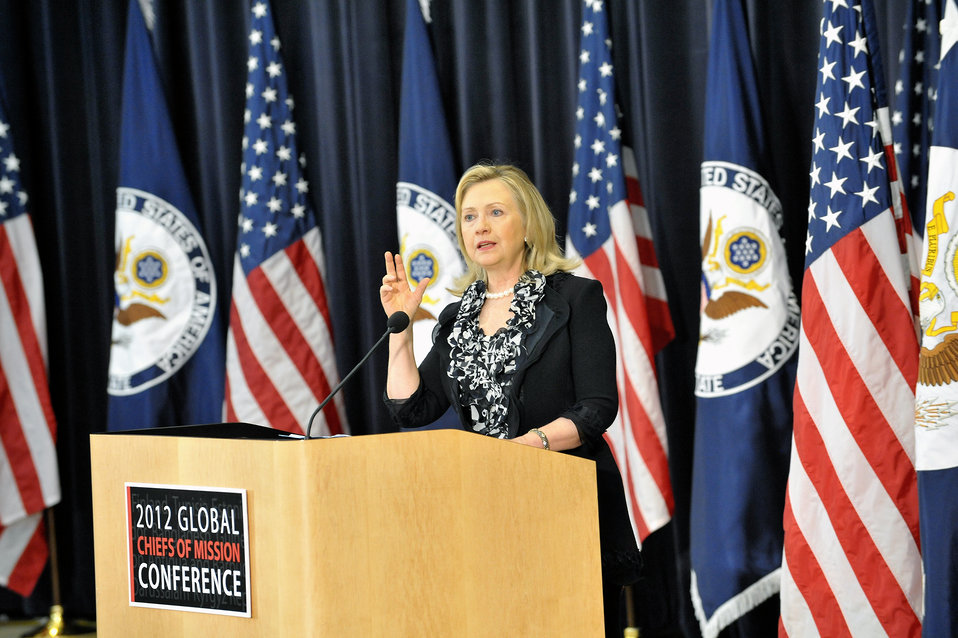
Secretary Clinton Addresses the 2012 Chiefs of Mission Conference

U.S. Secretary of State Hillary Rodham Clinton delivers remarks to the 2012 Chiefs of Mission Conference at the U.S. Department of State in Washington, D.C., on March 13, 2012.